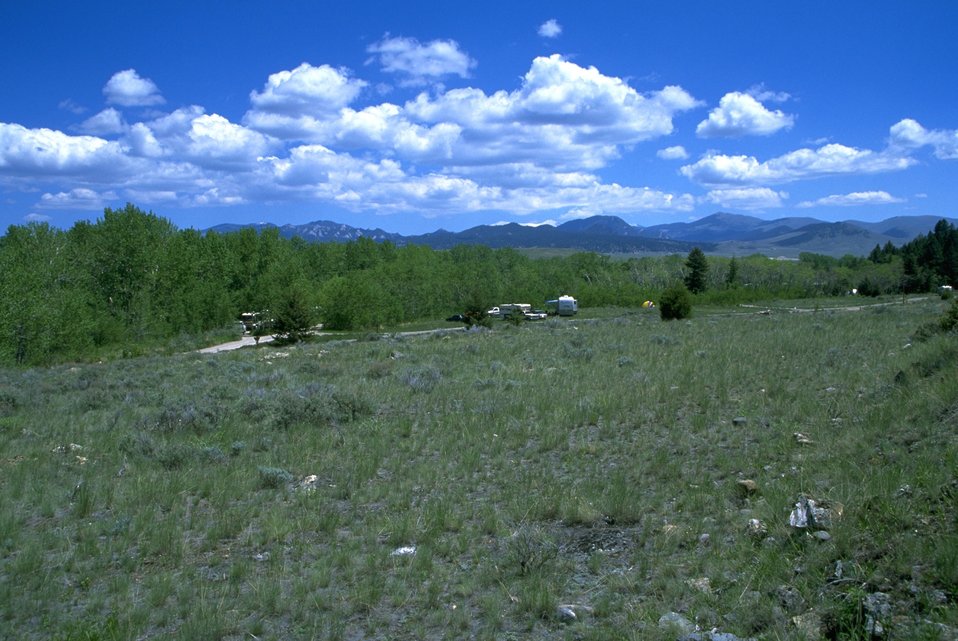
Camping along the Big Hole River